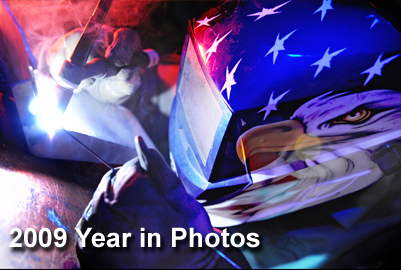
2009 Year in Photos

The year 2009 was a time for reflection and success as Airmen worldwide defended their nation through air, space and cyberspace. In this photo by Airman 1st Class Joshua J. Seybert, Senior Airman Nathan Schroeder welds a crack on a landing gear cover Feb. 24, 2009, at Ellsworth Air Force Base, S.D.